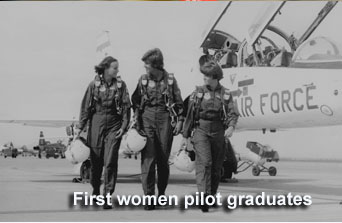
First women Air Force pilot graduates

On August 1977, Capts. Susan D. Rogers, Connie J. Engel and Mary E. Donahue walk away from the flight line at Williams Air Force Base, Ariz., after completion of a training flight. They are among the first ten women to graduate from Air Force undergraduate pilot training.